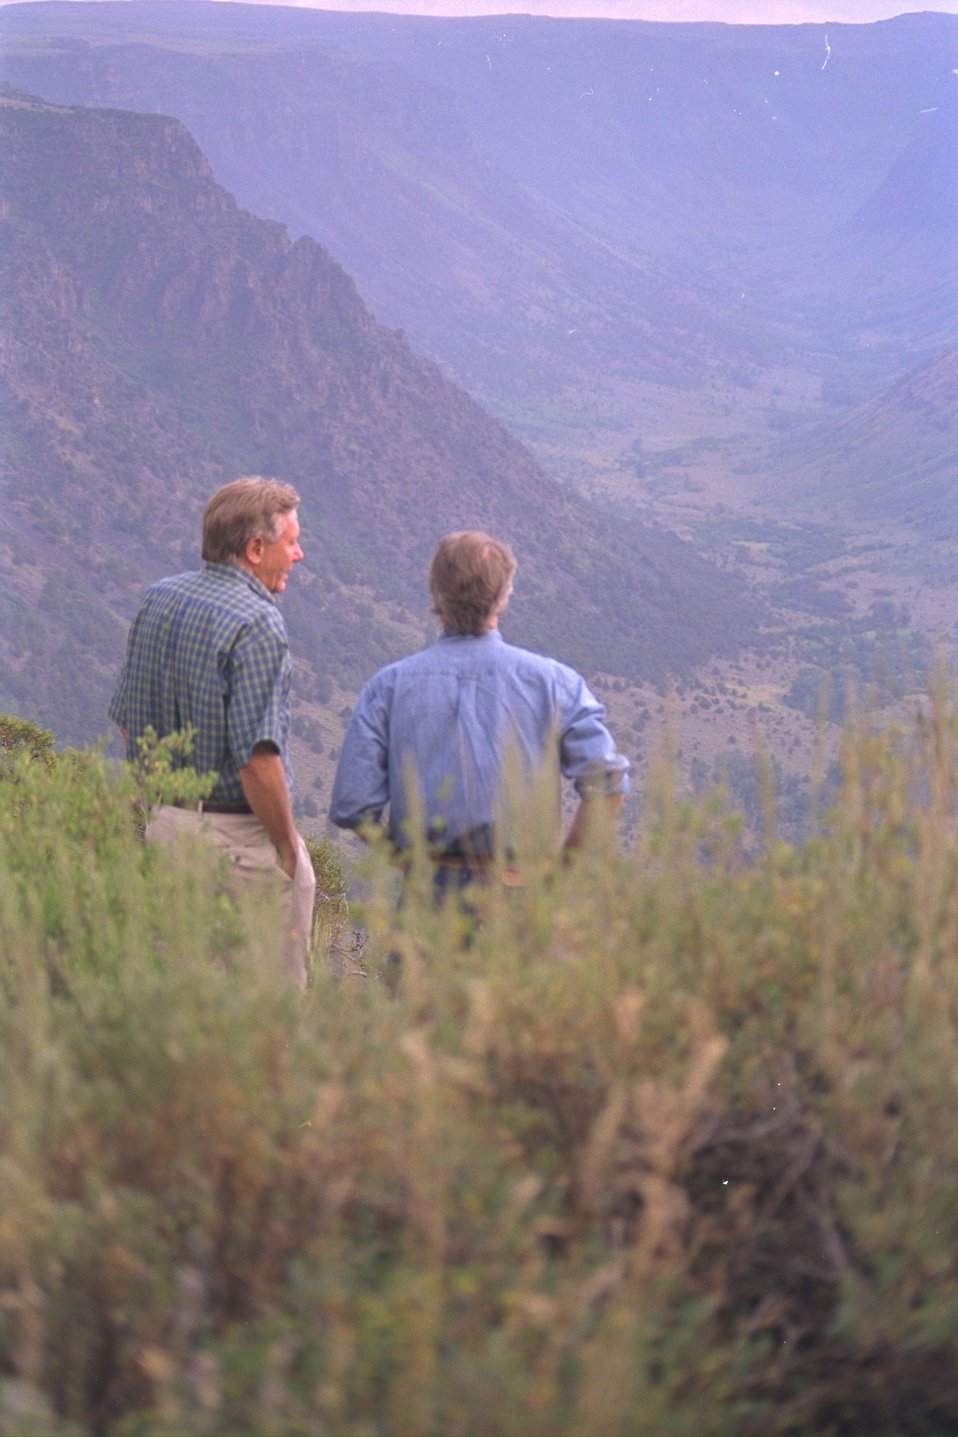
Secretary Babbitt (left) and Governor Kitzhaber (right) at Big Indian Gorge on the Steens.